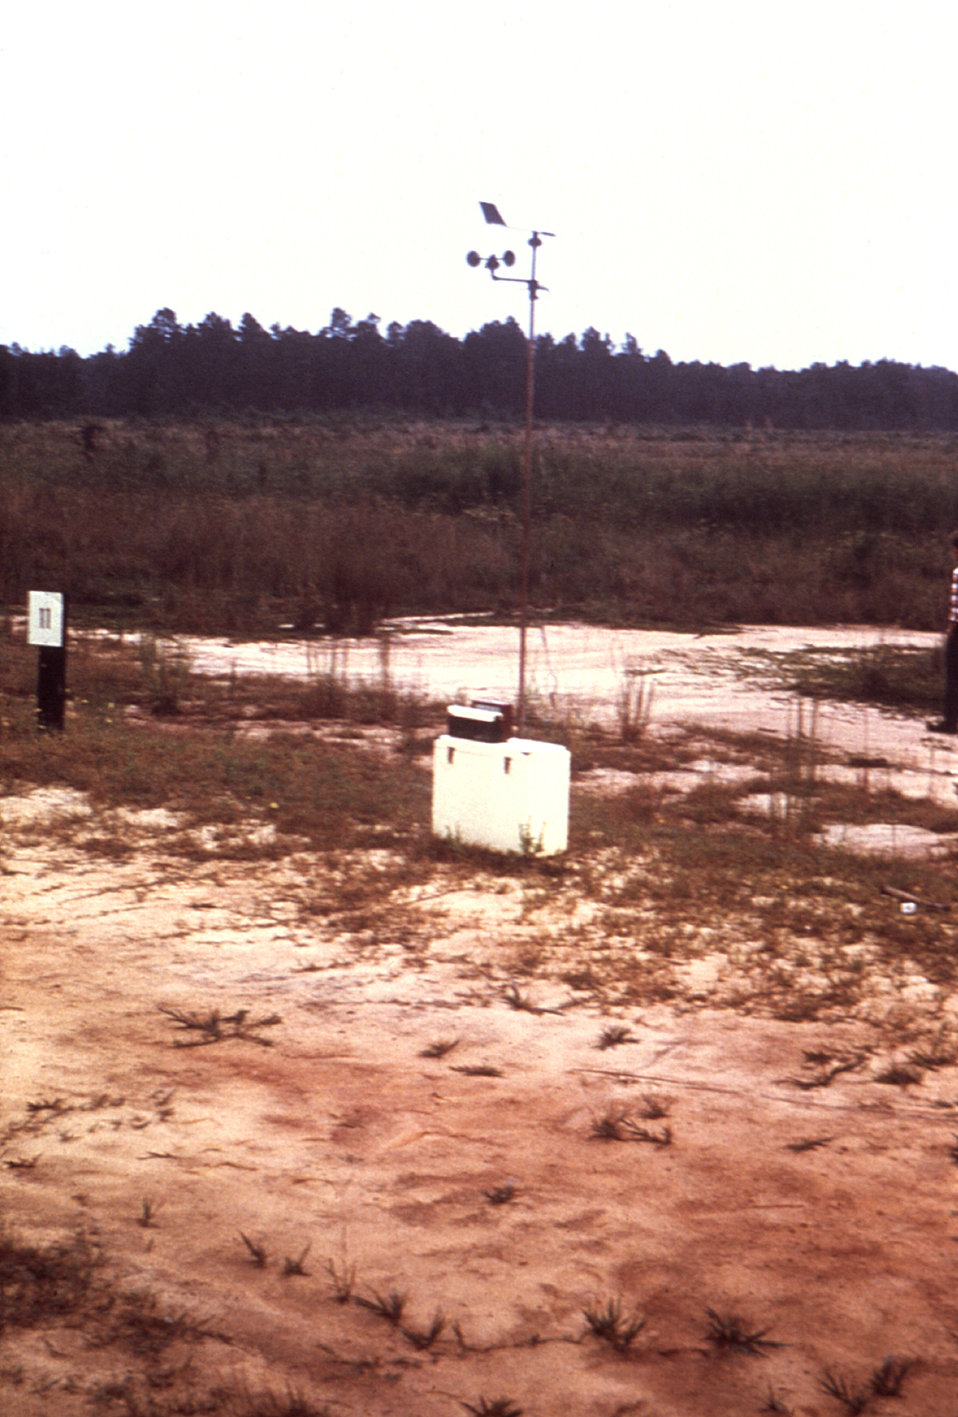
This 1981 photograph depicts a secluded weather monitoring station providing feedback to teams of ultra-low volume (ULV) insecticidal spray teams as to the weather conditions in pertinent vector habitats.